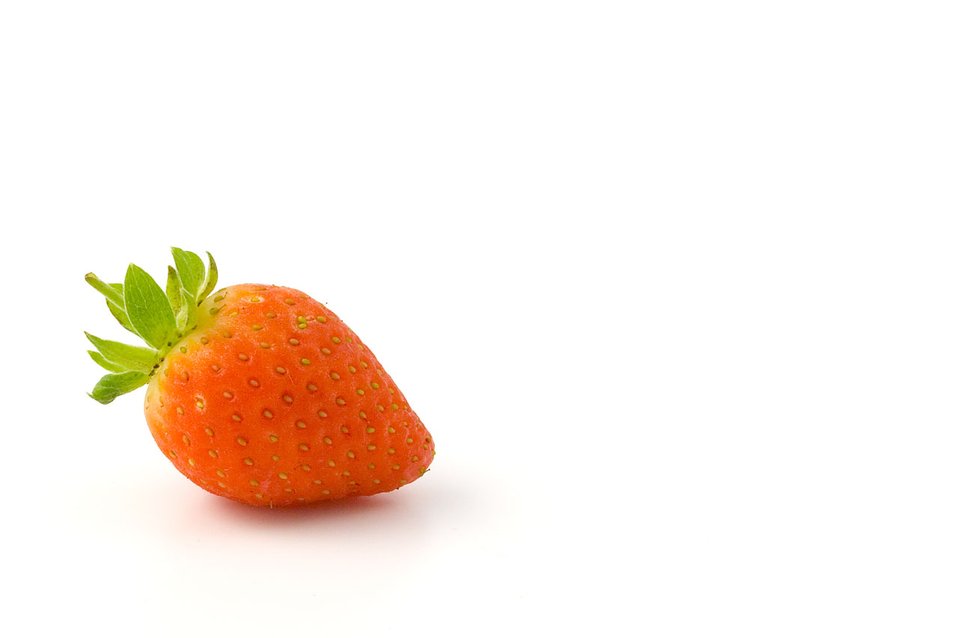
Strawberry

A single strawberry on white background.